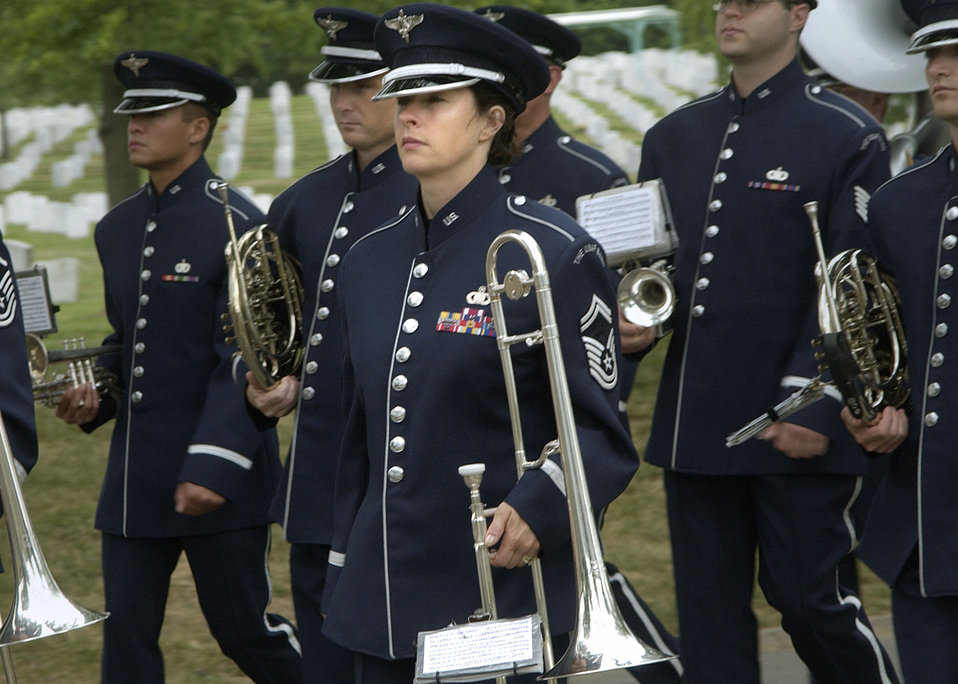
Band member selected for 'Hope' award

ARLINGTON, Va. -- Senior Master Sgt. Ann Highnote marches with the U.S. Air Force Band's ceremonial brass unit at Arlington National Cemetery. She is the band's superintendent and was recently selected as the recipient of the 2005 U.S. Armed Forces Spirit of Hope Award for the Air Force.